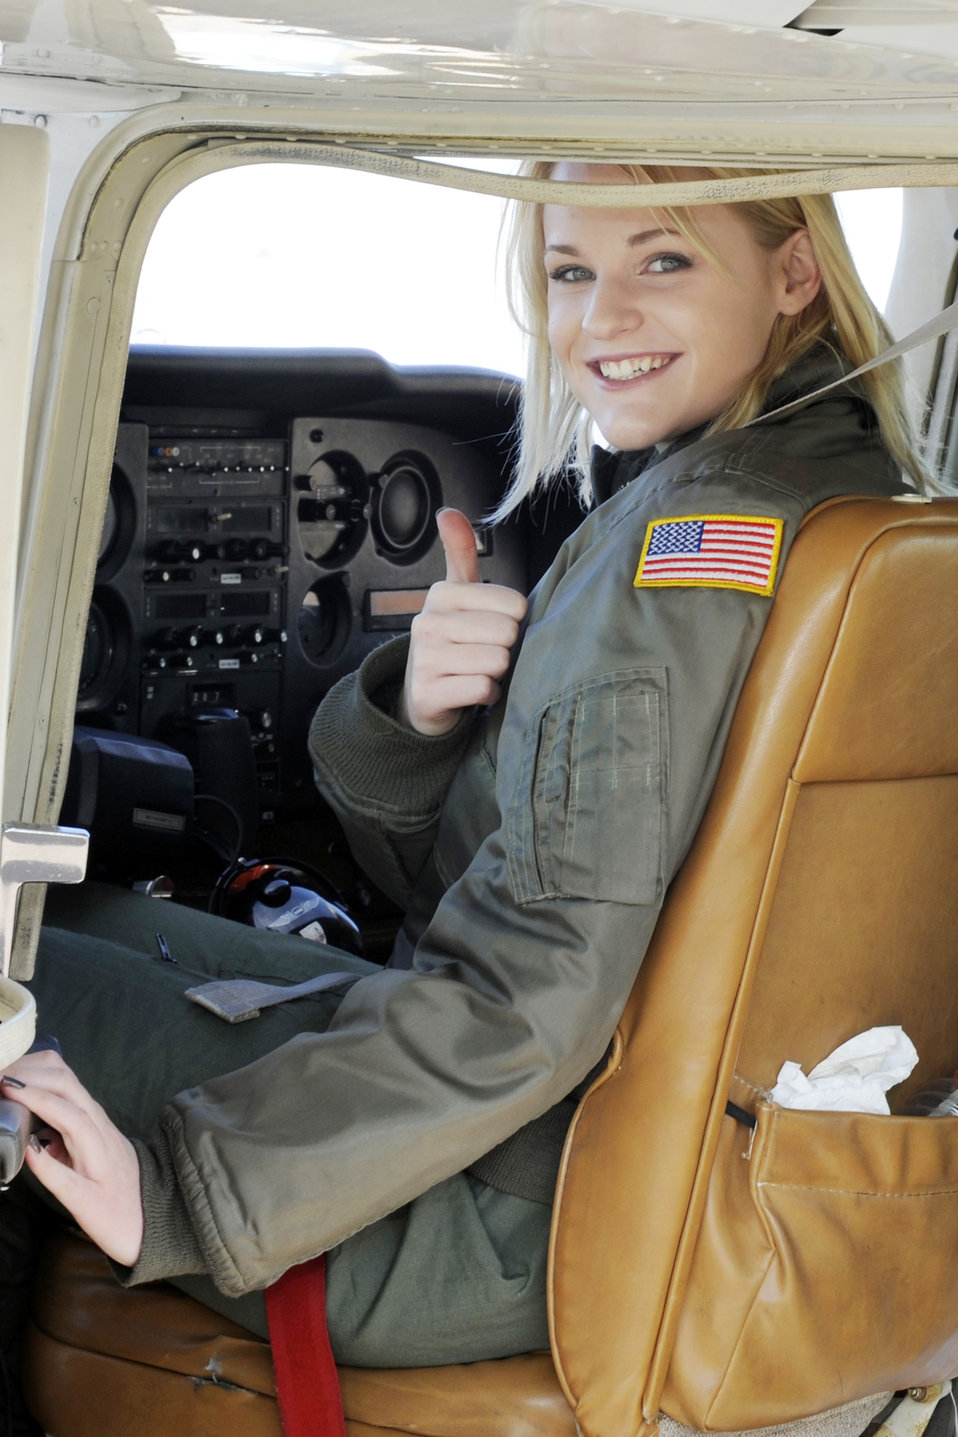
Cadet for a day

Hannah Marklin of Parker, Colo., gives a thumbs-up prior to an orientation flight Nov. 13, 2009, in a U.S. Air Force Academy Aero Club Cessna. She was visiting the Academy as